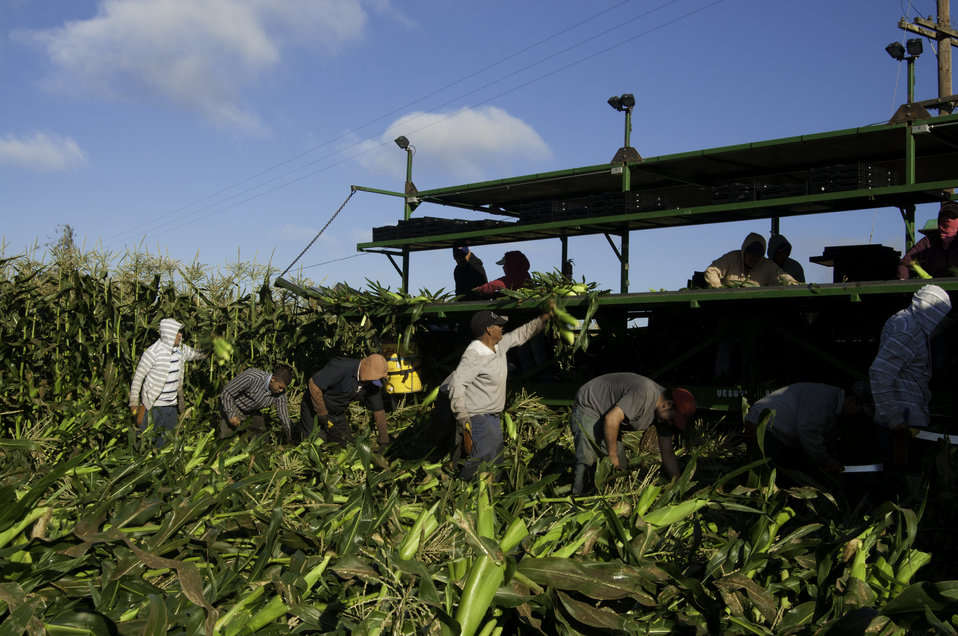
Migrant workers harvest corn on Uesugi Farms in Gilroy, CA on Wednesday, Aug. 28, 2013.